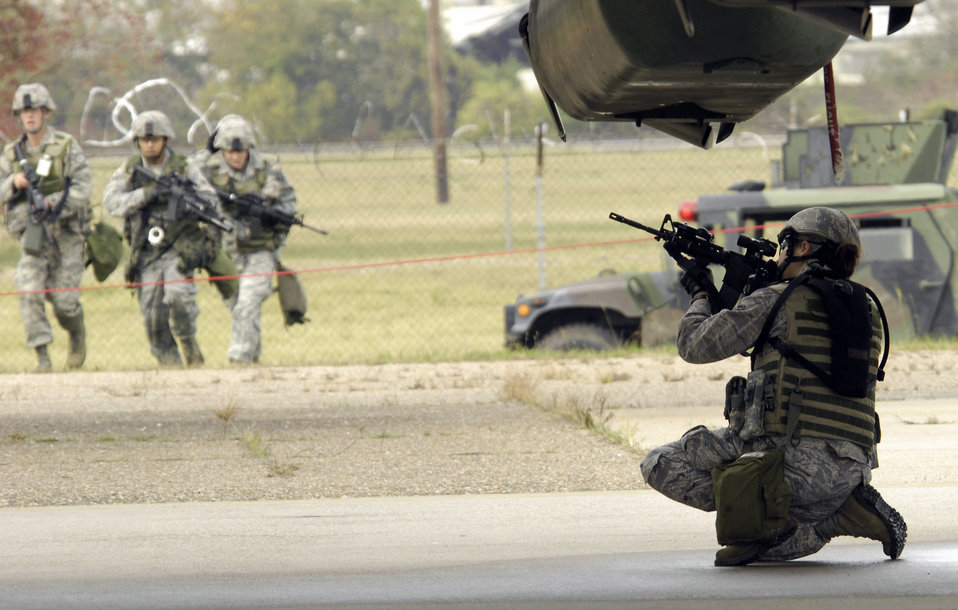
Barksdale officials complete Nuclear Surety Inspection

Members of the 2nd Security Forces Squadron perform recapture and recover operations during a portion of the Air Combat Command Nuclear Surety Inspection Nov. 12 at Barksdale Air Force Base, La. ACC Inspector General officials graded the base's nuclear surety program management and administration, the personnel reliability program and logistics movement.